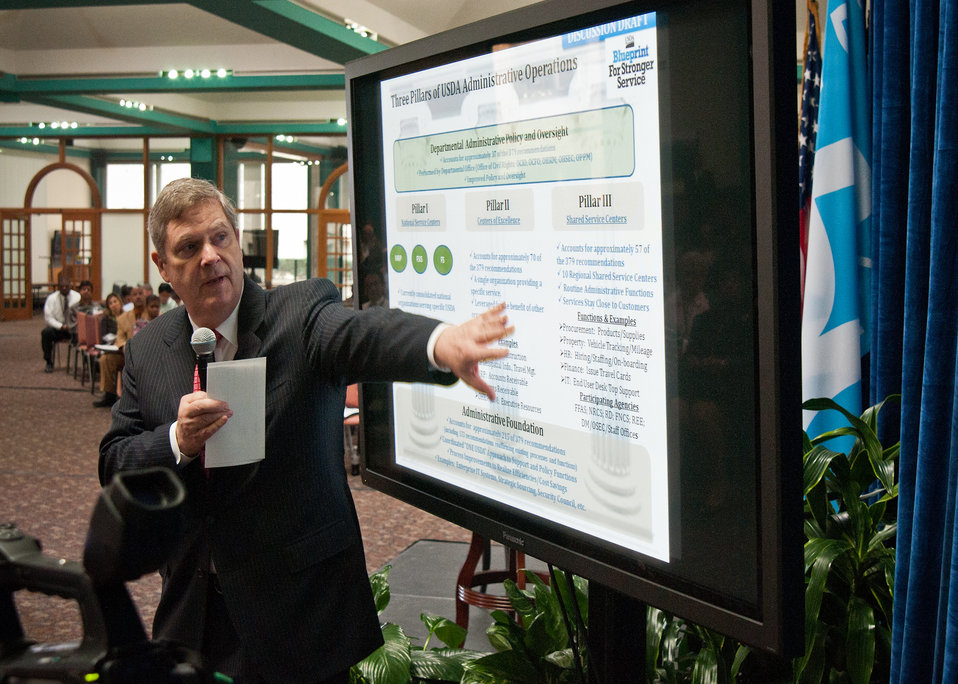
Agriculture Secretary Tom Vilsack explains the Three Pillars of the U. S. Department of Agriculture (USDA) Administrative Operations: National Service Centers, Centers of Excellence and Shared Service Centers during the Ask The Secretary event held in the South Building Cafeteria, in Washington, D.C., on Wednesday, March 21, 2012, gave the opportunity for USDA employees the ask questions about the Blueprint for Stronger Service Initiative and hear directly from Secretary Vilsack. This forum encouraged USDA employees to offer their ideas, voice their concerns, and gather more information on the discussions that are taking place within the USDA Administrative Solutions Project. The Blueprint for Stronger Service Initiative aims to build a modern and efficient service organization that is closely timed with technological innovations - and better suited to respond to 21st century agricultural challenges.